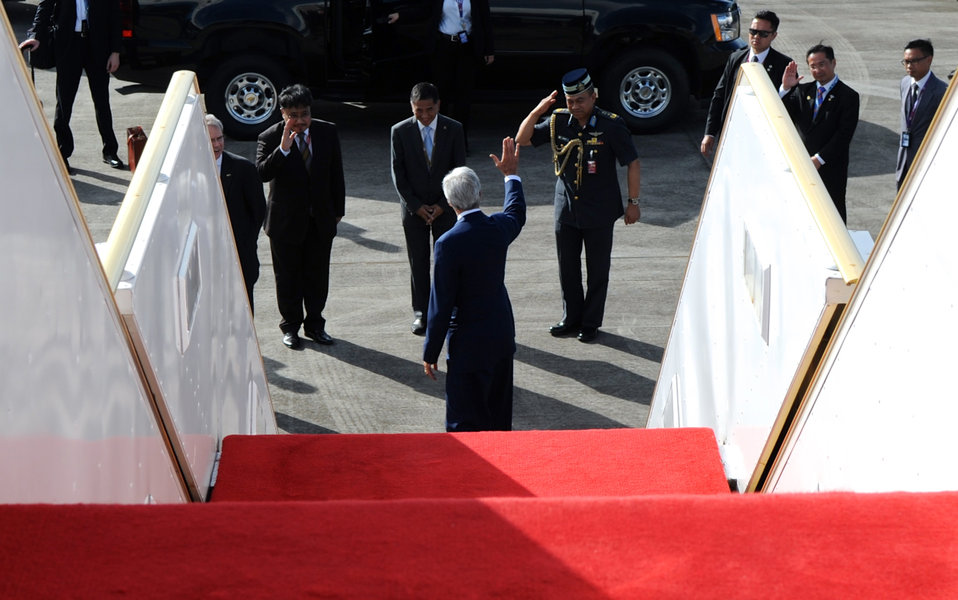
Secretary Kerry Says Goodbye to Officials in Brunei

U.S. Secretary of State John Kerry says goodbye to officials in Brunei after concluding a visit to Bandar Seri Begawan on October 10, 2013.